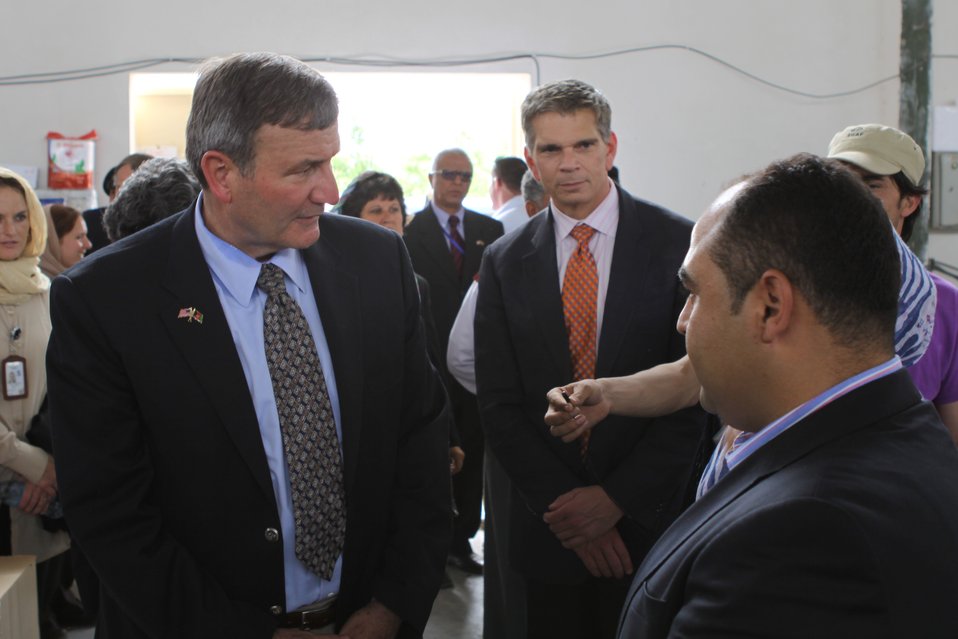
100525 Hirat Marble Conference 798